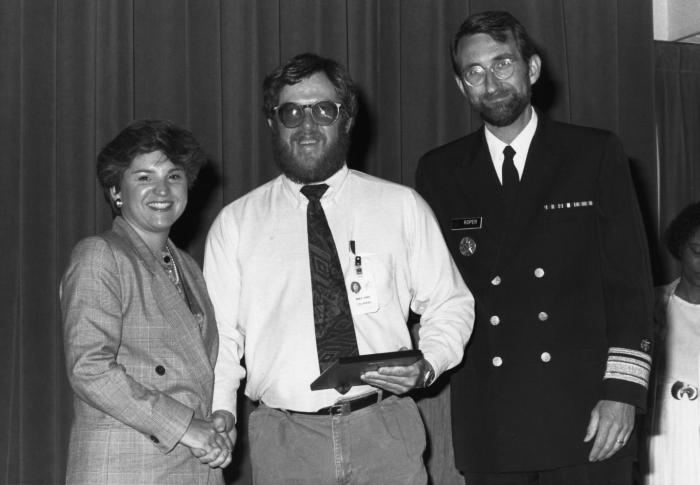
This photograph shows Deborah Mathis (left), who at the time was the Centers for Disease Control's Assistant Director for Management and Operations for the former Public Health Practice Program Office (PHPPO), and Dr. William L. Roper (right), former Director of the CDC (1990 - 1993), as they were presenting an award to Dennis McDowell (center), former Director of the Division of Professional Development and Evaluation (DPDE).